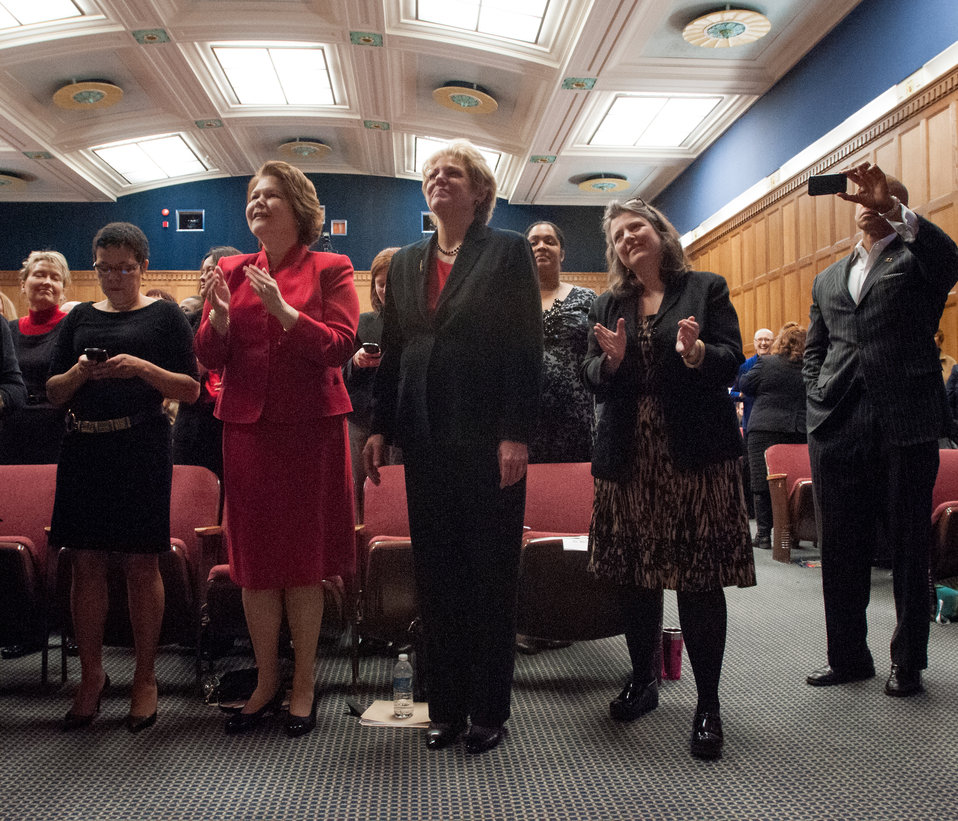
The audience gets energized when Renee Allen, Pamela Carter, Rita Meade and Reedema Rock sing “I’m every Woman” to close-out the 2013 Women’s History Month Observance event, “Women Inspiring Innovation Through Imagination: Celebrating Women in Science, Technology, Engineering, and Mathematics, onThursday, March 21, 2013, in Washington, D.C.